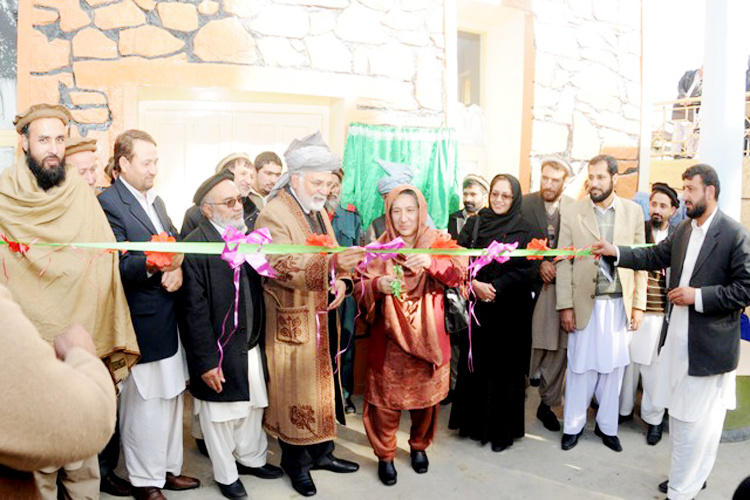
Provincial government, American servicemembers dedicate midwifery program in Afghanistan

Fazlullah Wahidi, Dr. Asadullah Fazli and Pashtoon Azfar take turns cutting the ribbon commemorating the opening of the Kunar midwifery program training center Dec. 22 in Asadabad, Afghanistan. The midwifery program will train 24 women from Kunar province in an 18-month long course on providing prenatal and postpartum care to expectant mothers and their babies to decrease infant mortality rates. Mr. Wahidi is the Kunar provincial governor. Doctor Fazli is the provincial Director of Public Health. Pashtoon Azfar is the Afghan Midwife Committee chief.